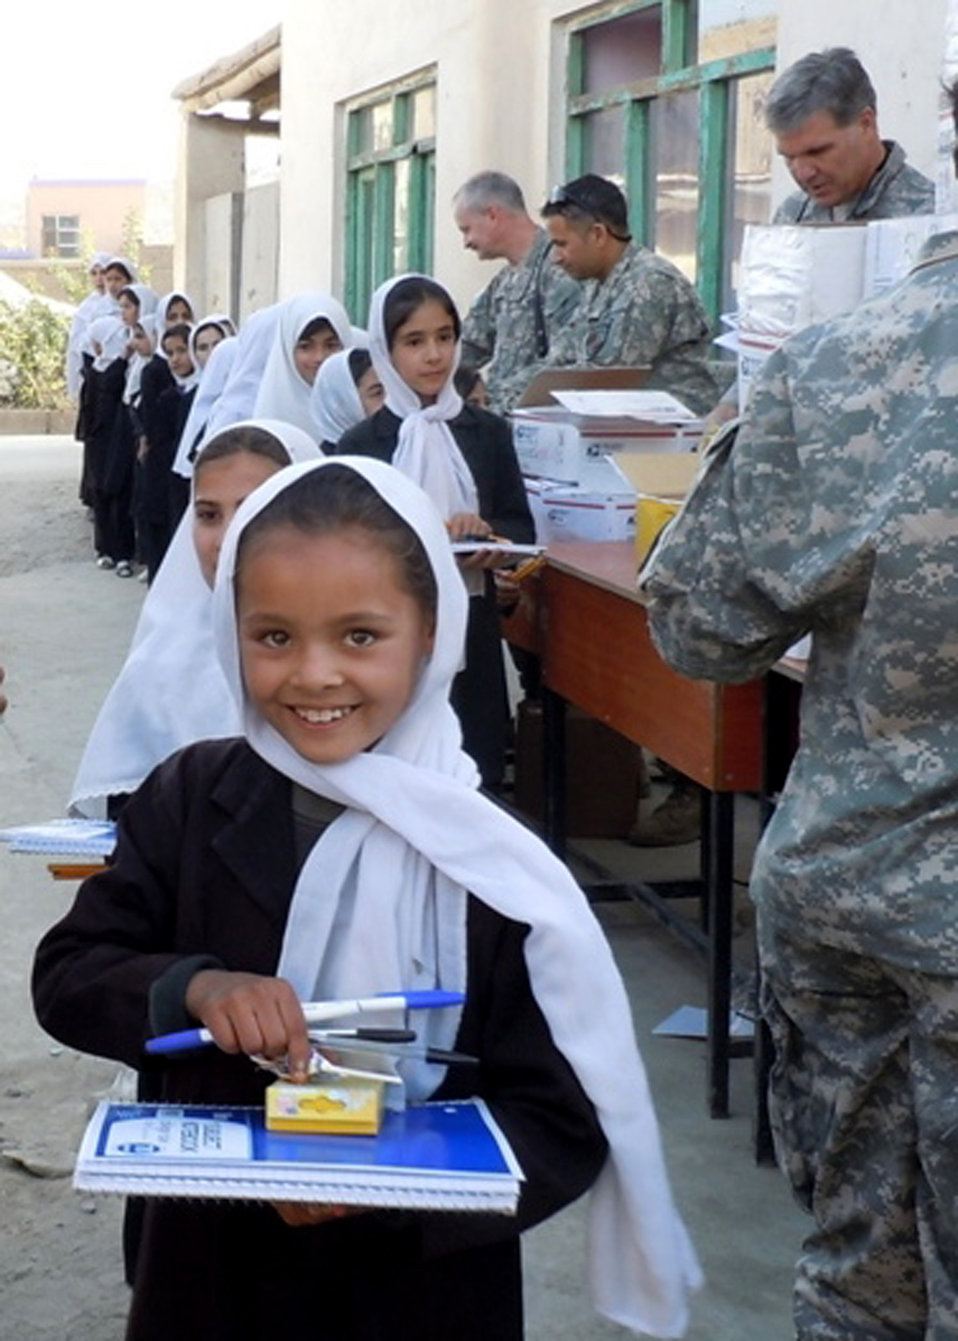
RSC-Captial Afghanistan girls' school

Col. Bob Wicks (top right) and other members of Regional Support Command-Capital hand out supplies to young girls at a school in Kabul, Afghanistan. Colonel Wicks and the other RSC-Capital military service members adopted a girls' school and donated tents and supplies from care packages sent by family and friends. Colonel Wicks is the Regional Support Command-Capital commander.